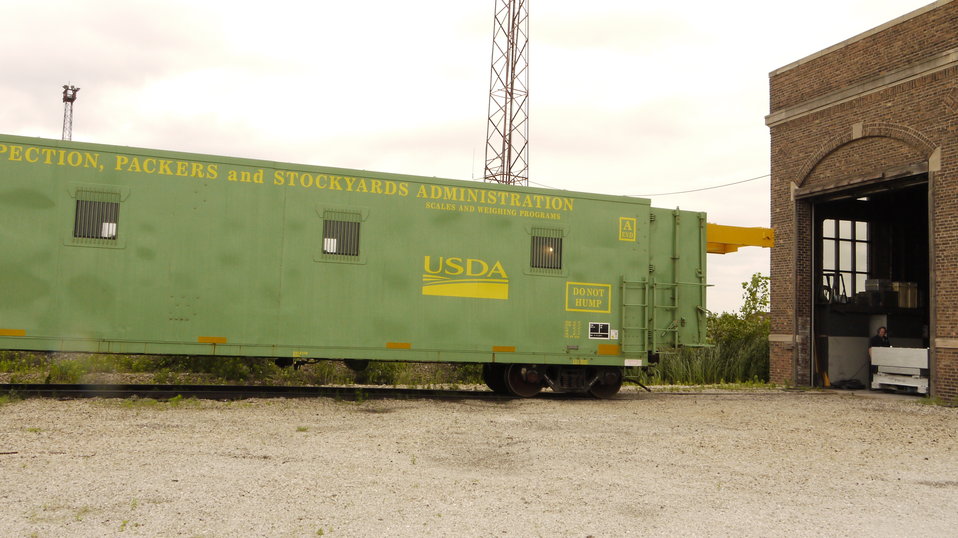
The U.S. Department of Agriculture’s (USDA) Grain Inspection, Packers and Stockyard Administration (GIPSA) uses this FGWX700000 test car unit to calibrate railroad track scales that are used to weigh grain and other agricultural products at the USDA GIPSA Master Scale Depot in Chicago, IL on Jul. 2, 2013. USDA GIPSA entered into an agreement with the National Institute of Standards and Technology (NIST) and the Association of American Railroads (AAR) in 1980 transferring responsibility to USDA’s GIPSA to maintain the Master Scale facility in Chicago, IL and calibrate all the master scales in the continental U.S. annually.